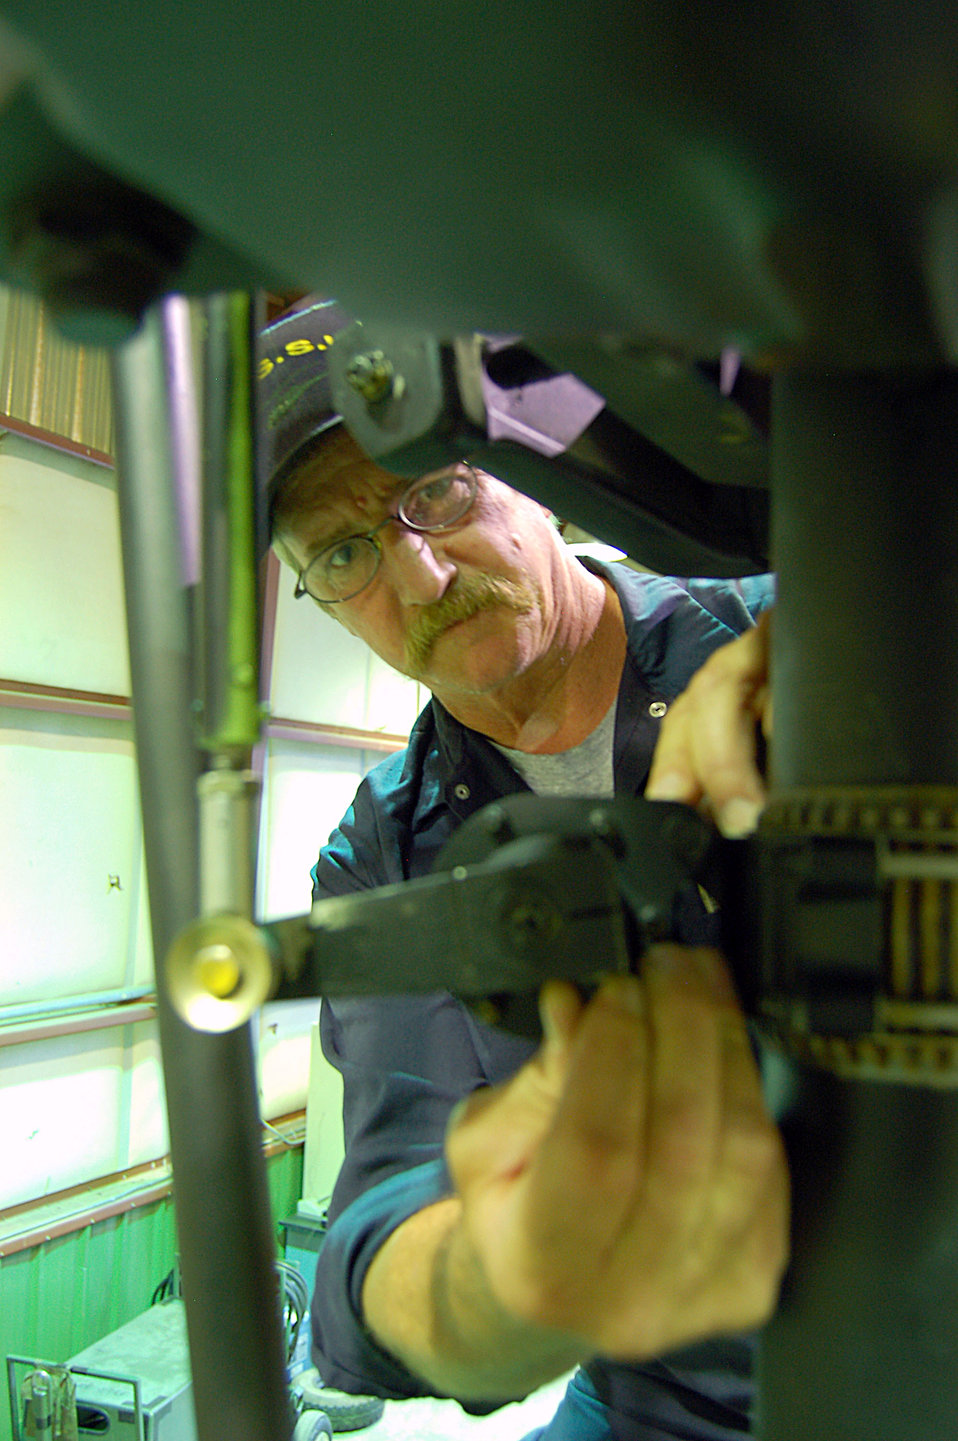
Rescue flight crews provide help from above

Gary Langstaff completes a pre-flight maintenance inspection on the main rotor assembly of a UH-1N Huey helicopter assigned to the 36th Rescue Flight based at Fairchild Air Force Base, Wash. Mr. Langstaff, who served 10 years as a UH-1 crew chief in the Army, is contracted through Sikorsky Support Services, Inc. to provide on-site maintenance service for the flight's missions.